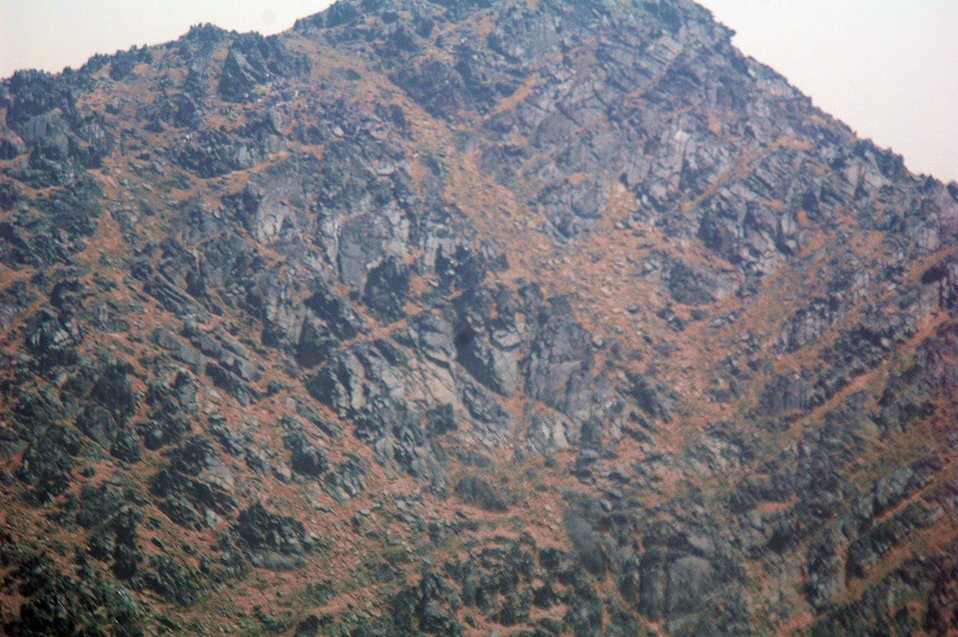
CODEL Berman